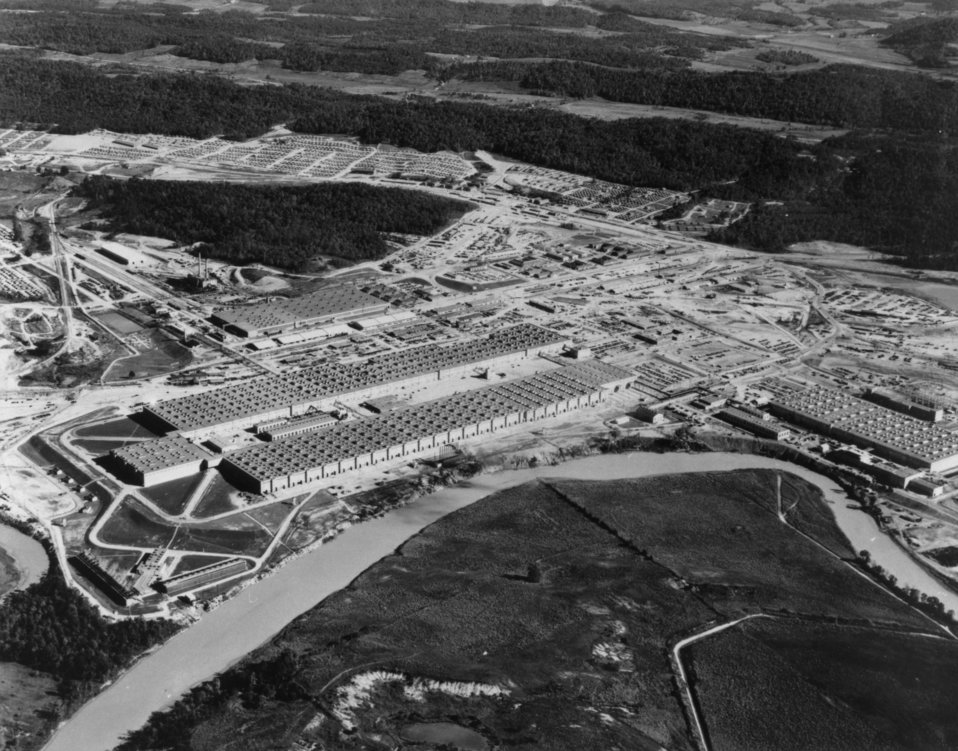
Aerial of Oak Ridge